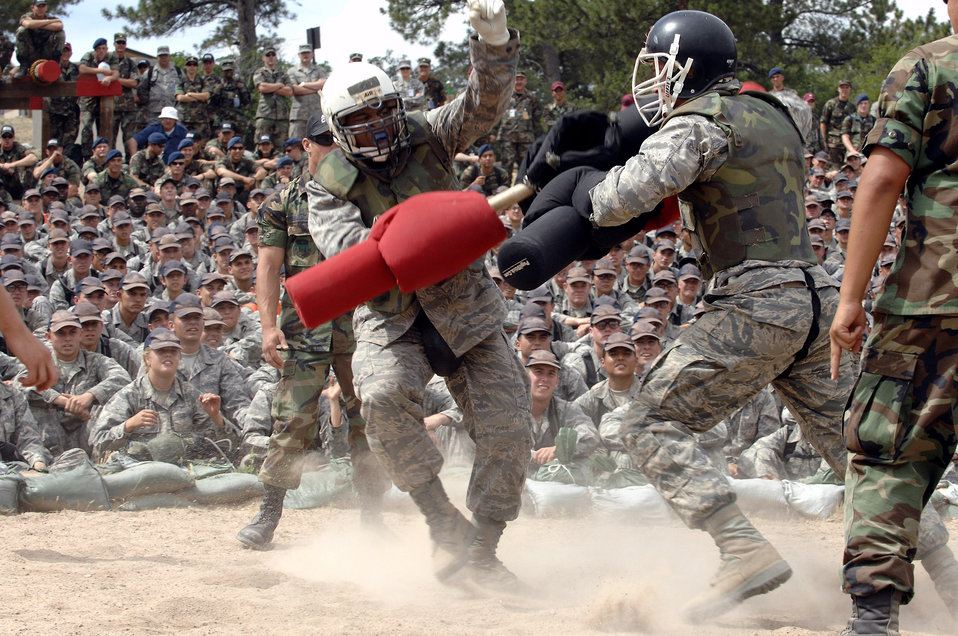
Big Bad Basic

U.S. Air Force Academy basic cadet James Franklin, in white helmet, takes a shot from basic cadet Jonathan Newman during the Big Bad Basic finals July 26. Cadet Newman overpowered Cadet Franklin to be named